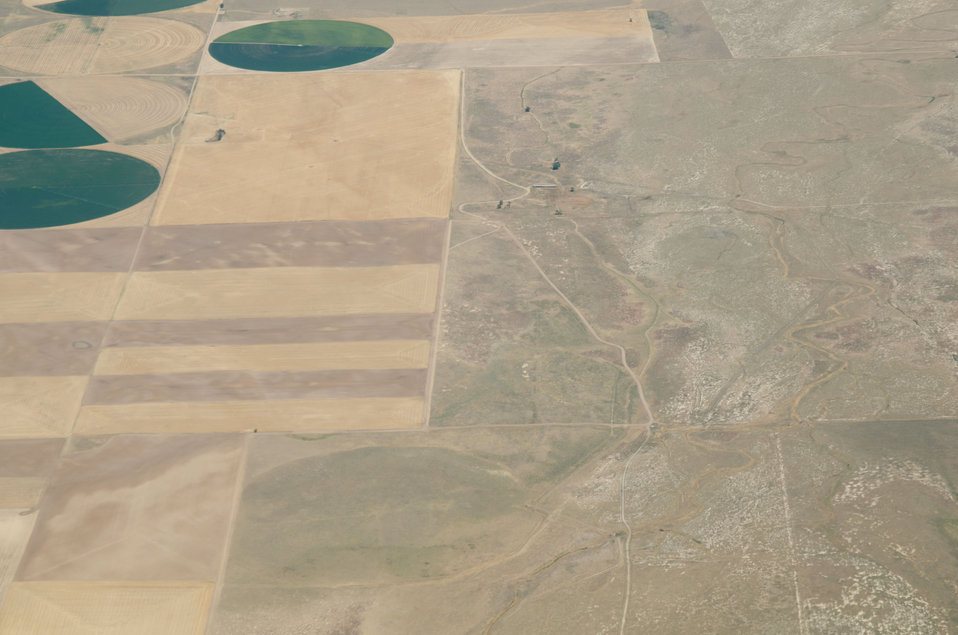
Aerial views of drought affected Colorado farm lands, near Wiggins, Colorado on Saturday, July 21, 2012. Green areas are irrigated, the yellow areas are dryland wheat crops.